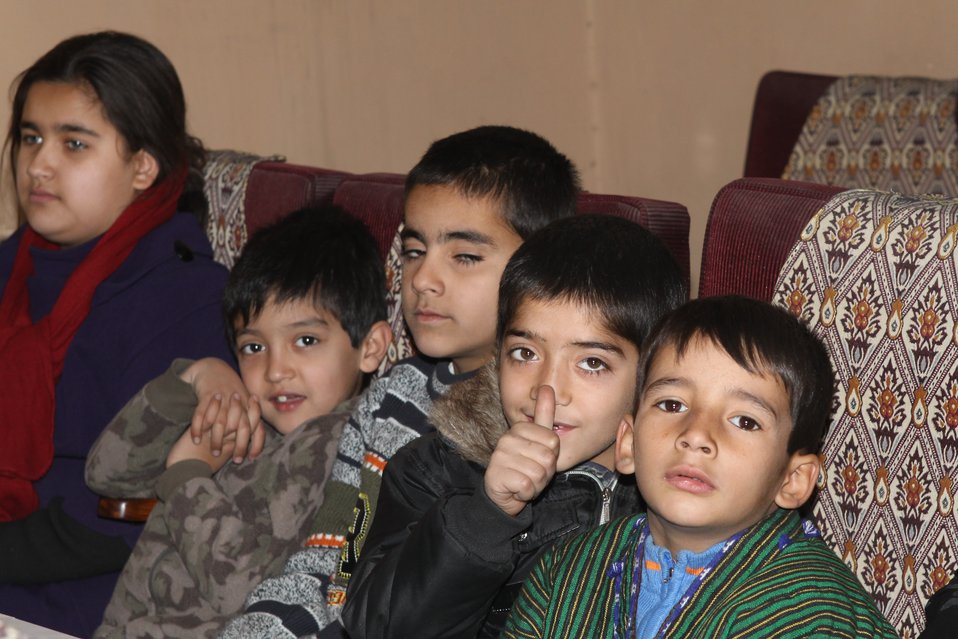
Community Health Workers Celebrated

Kabul, Afghanistan | December 5, 2010 — In support of the United Nations designated International Volunteer Day for Economic and Social Development, Afghanistan’s Ministry of Public Health celebrated its annual Community Health Worker Day today. Acting Minister of Public Health Dr. Suraya Dalil, USAID Senior Deputy Mission Director Robert Hellyer, other government officials, and international donors joined in recognizing the critical contribution of community health workers in Afghanistan and encouraging them to continue their voluntary support to their communities.
The event praised the contributions of the more than 22,000 volunteers throughout the country who deliver community level health-education, counseling, and services out of village health posts located in private homes. The Ministry of Public Health envisioned that community-based healthcare programs will actively encourage communities and families to adopt healthy lifestyles and behaviors, and provide families access to high quality and socially acceptable preventative medicine and life-saving services.
“We have 22,000 community health workers in Afghanistan that are able to implement the basic and standard medicines. They all have been trained through a job description,” said Minister Dalil. Addressing the health workers, she added, “I am proud and feel powerful that I have people like you.”
USAID-funded health projects collaborate closely with the Ministry of Public Health to improve the health and nutritional status of Afghans, provide quality primary healthcare, and promote healthy behaviors at the community and household-levels. USAID supported the training of more than 9,000 of the volunteer community health workers currently working in Afghanistan.
“On behalf of the American people, I congratulate the Community Health Workers for their diligence to gain the skills and knowledge necessary to serve their communities in this important role,” said USAID Senior Deputy Mission Director Hellyer. “USAID strongly supports community based health care and believes that quality community-based health services are essential to reaching Afghanistan’s Millennium Development Goals.”
To support the Basic Package of Health Services, USAID assisted in developing the community health worker training manual, helped train community health worker supervisors and master-trainers, facilitated in-service training, and produced and developed reporting tools, job aids, and education materials.